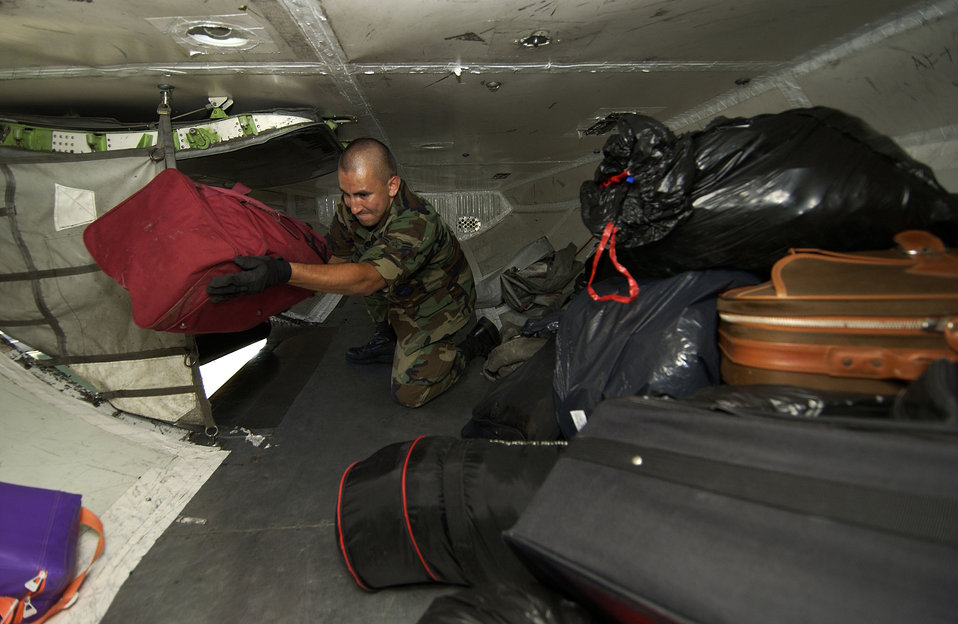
Loading luggage

LOUIS ARMSTRONG NEW ORLEANS INTERNATIONAL AIRPORT, La. -- Airman 1st Class Oscar Olave loads luggage in the cargo compartment of a commercial airliner here Sept. 9, 2005. Airman Olave is working at the airport assisting displaced residents with transitions into shelters across the United States. Airman Olave is from the 621st Contingency Response Group, McGuire Air Force Base, N.J.